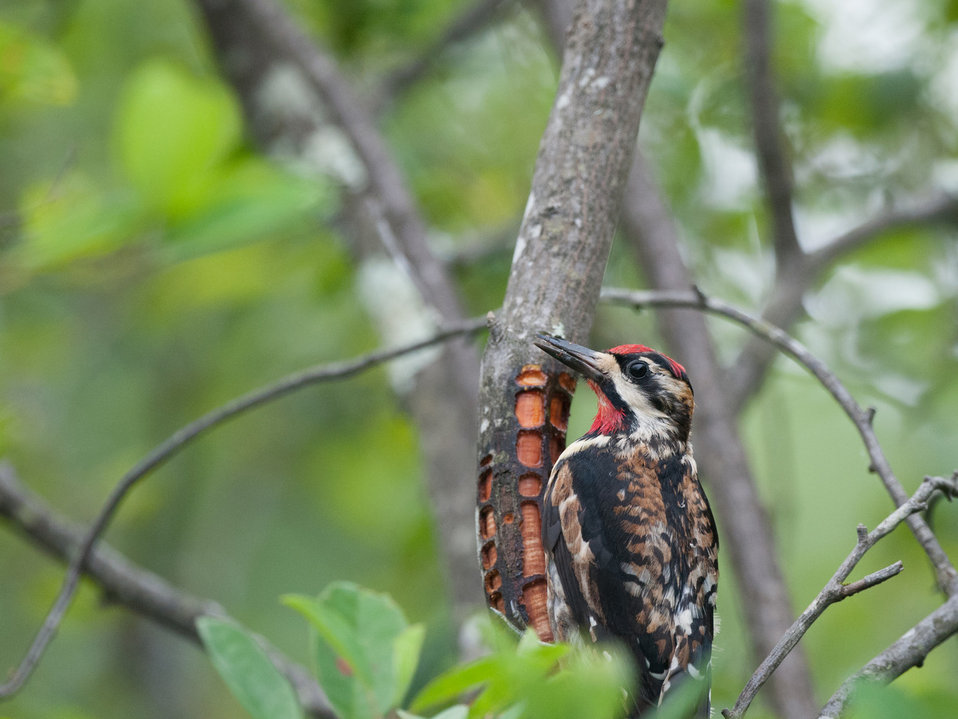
Yellow-bellied Sapsucker

Photographed at the Quabbin Reservoir.